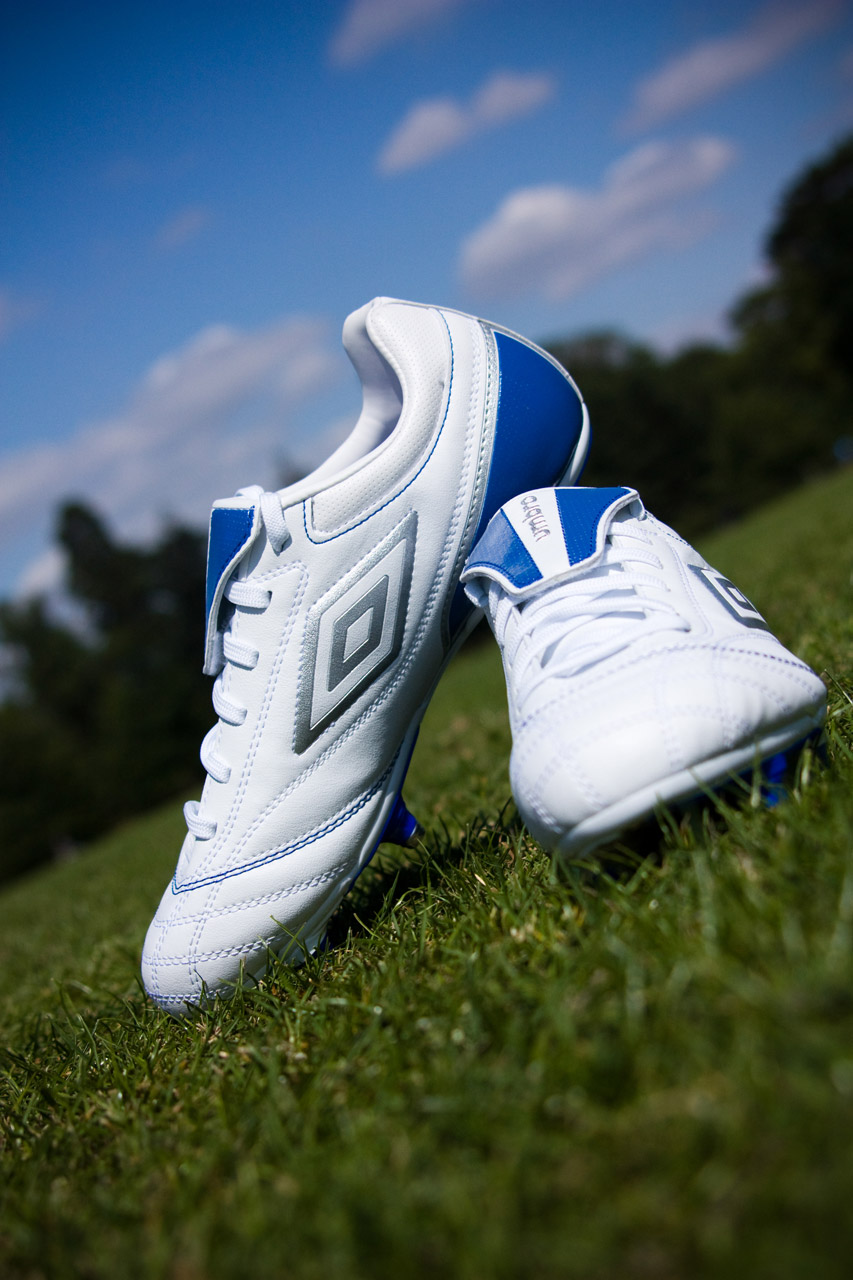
Football boots.